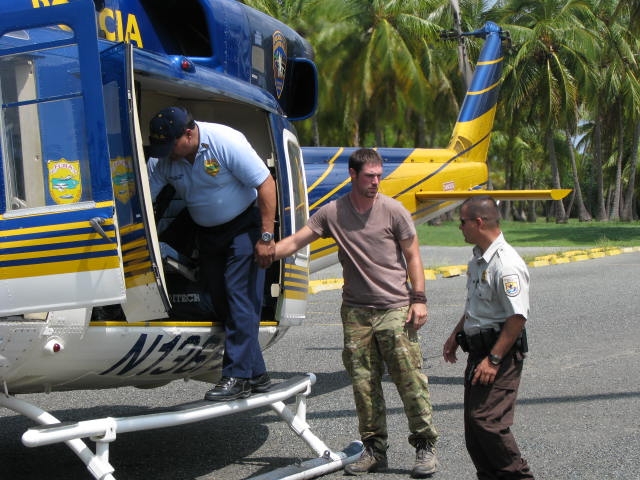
Officer Bryant Marcial and rhesus monkey eradication

National Wildlife Refuge System Law Enforcement Officer Bryant Marcial (right) escorts U.S. Fish and Wildlife Service contractors hired to eradicate non-native, invasive Rhesus macaque monkeys from Desecheo National Wildlife Refuge in the Caribbean. Marcial was named 2011 Officer of the Year for the Service’s Southeast Region. (USFWS)